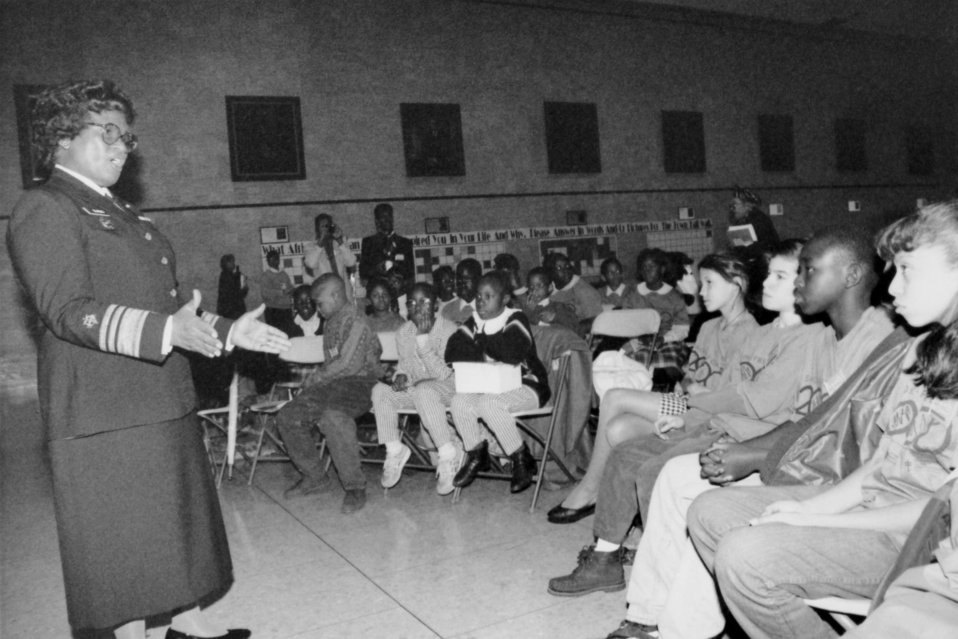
With reporters and television cameras on hand, this 1993 photograph showed the Surgeon General, Dr. Joycelyn Elders (1993 - 1994) as she was addressing school children as to the dangers of smoking.